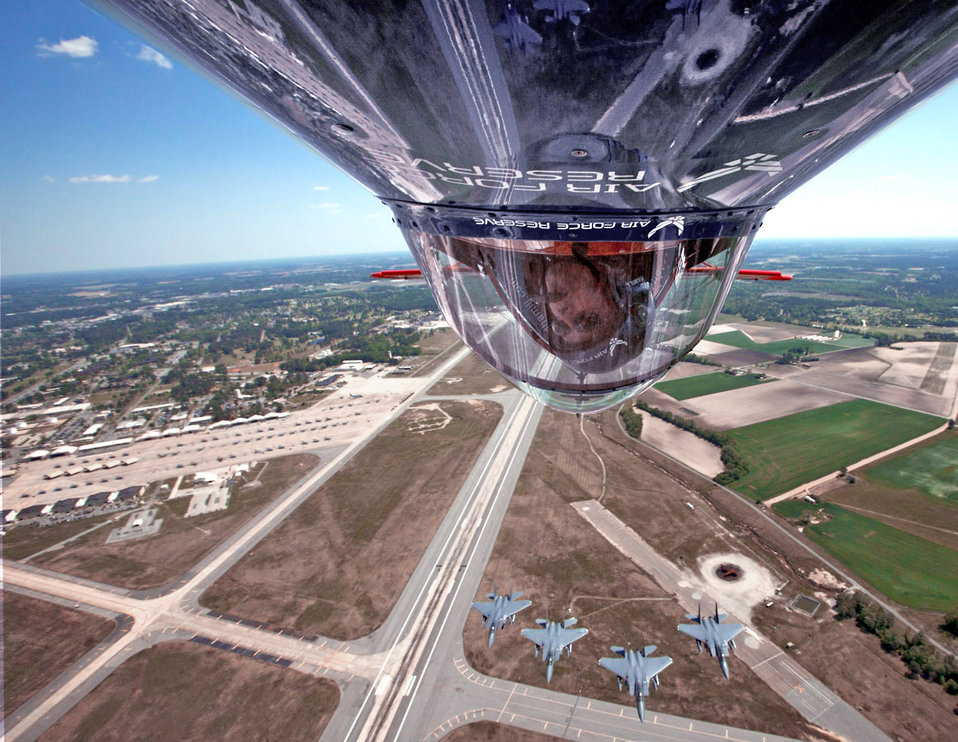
Topsy turvy

Lt. Col. Ed Hamill turns his Air Force Reserve stunt plane upside down to get a better look at four F-15E Strike Eagles approaching from the rear. Colonel Hamill was in the two-day air show at Seymour Johnson Air Force Base, N.C., April 25 and 26 that attracted more than 100,000 spectators.